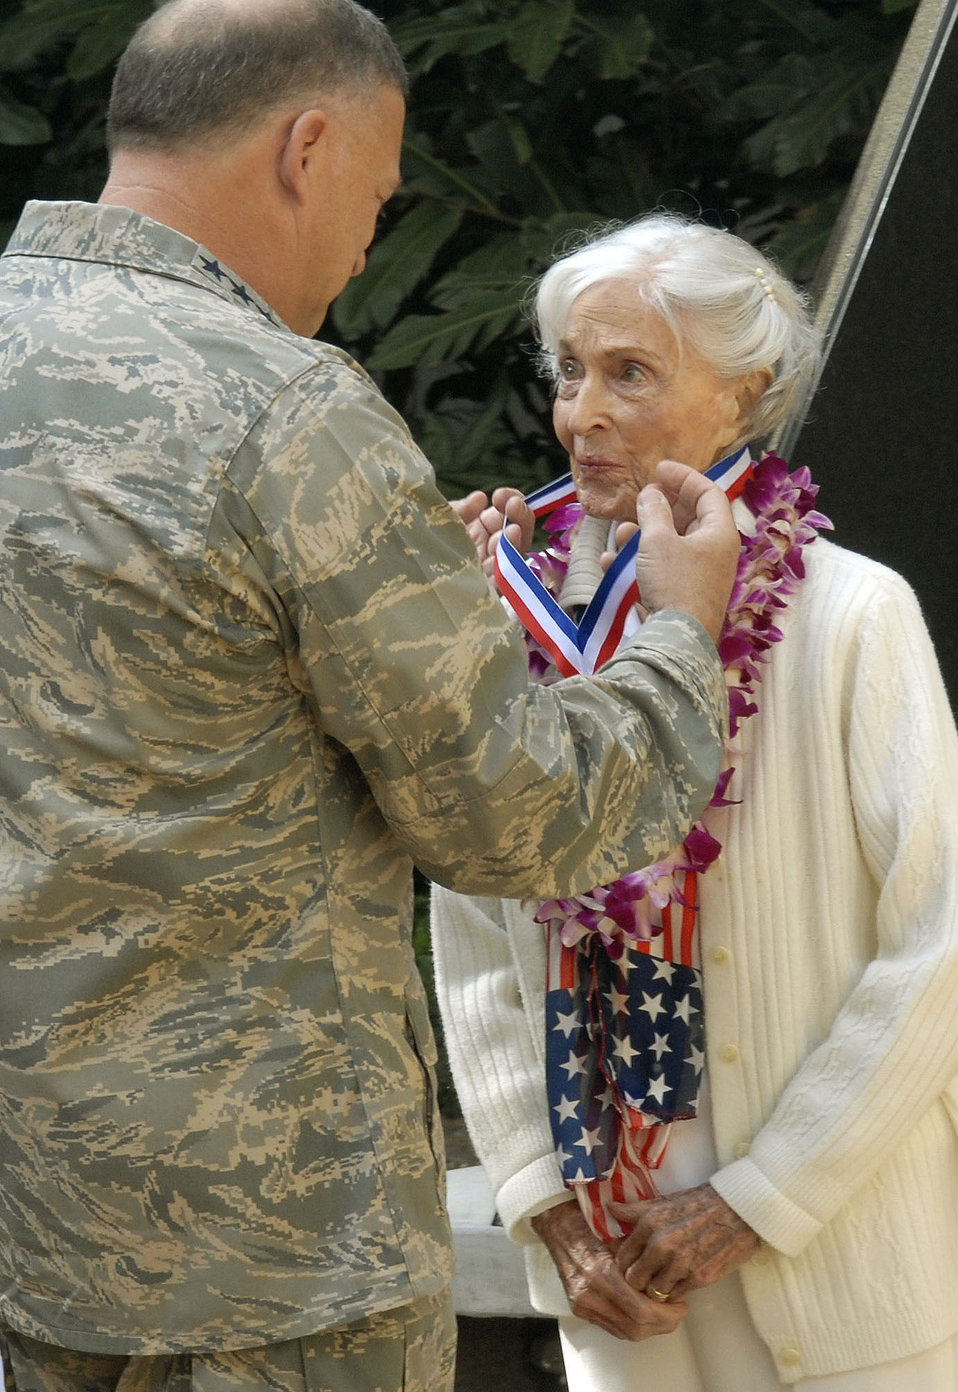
PACAF commander presents medallion to World War II nurse

Gen. Gary North presents a medallion to Doris Avery, a member of the